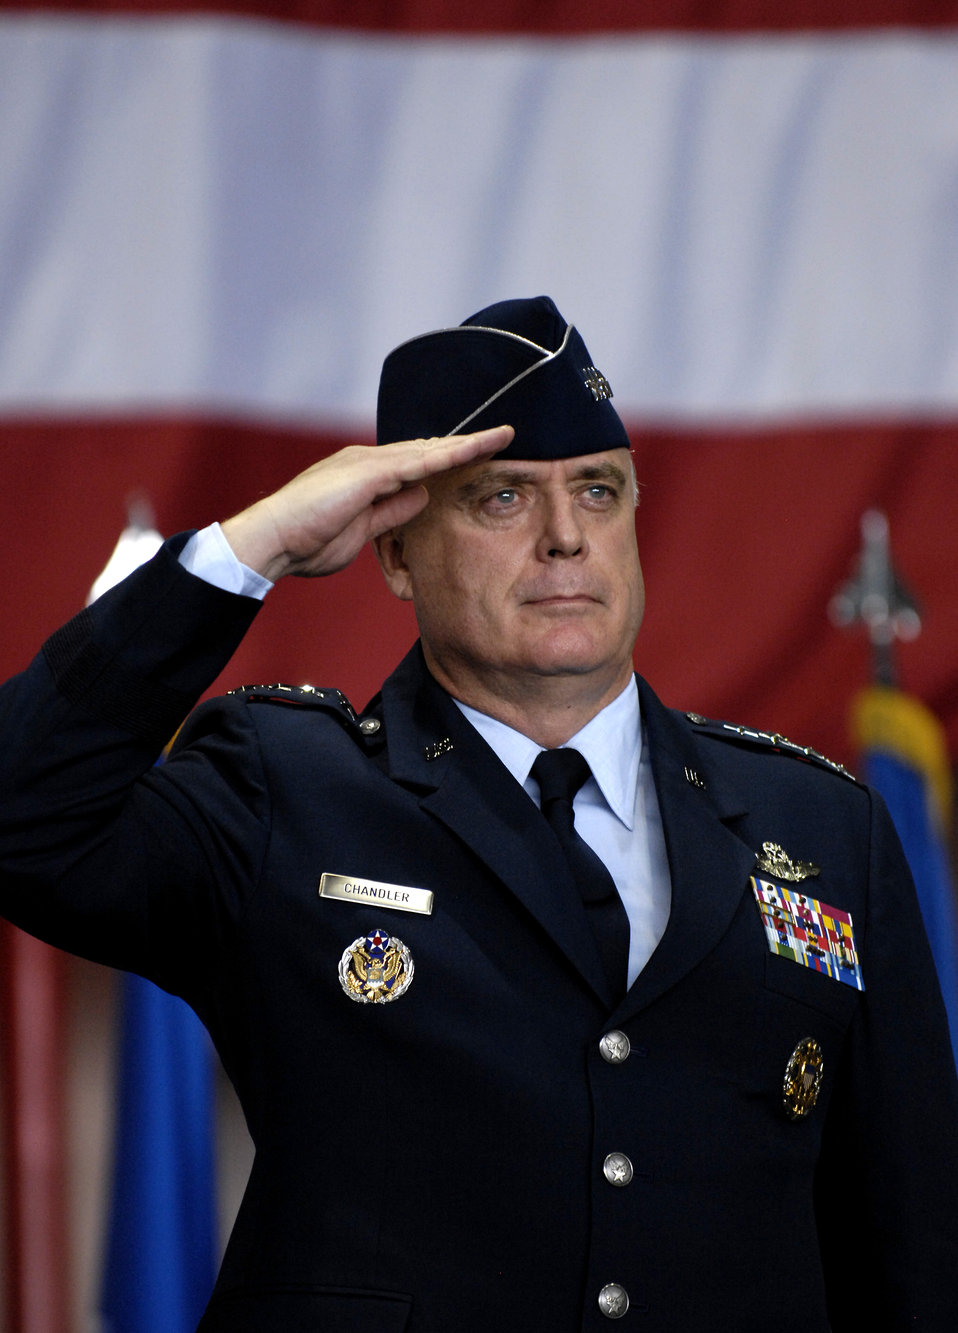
General Chandler takes command

Gen. Carrol H. Chandler receives his first salute from the Airmen of Pacific Air Forces Nov. 30 during his change of command ceremony at Hickam Air Force Base, Hawaii. Gen. T. Michael Moseley, Chief of Staff, U.S. Air Force and Adm. Timothy J. Keating, Commander U.S. Pacific Command presided over the change of command. Gen. Chandler assumed command of PACAF from Gen. Paul V. Hester during the ceremony.